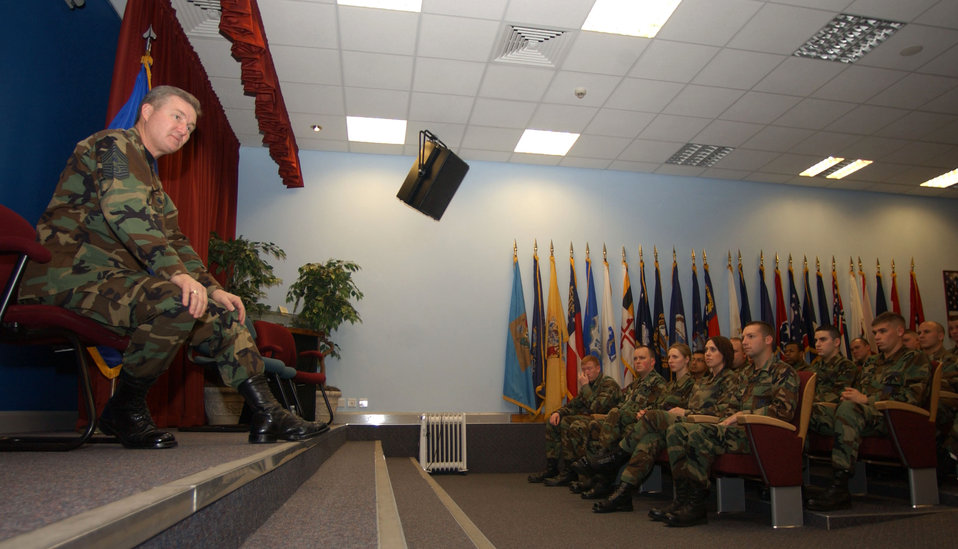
Chief visit

Chief Master Sgt. of the Air Force Gerald R. Murray speaks to Airmen attending the Mathies Airman Leadership School during his visit to RAF Lakenheath, United Kingdom, Friday, March 10, 2006. He spoke to the Class 2006-D Airmen about mentorship, force shaping and the steady increases in military pay compared to the civilian environment.